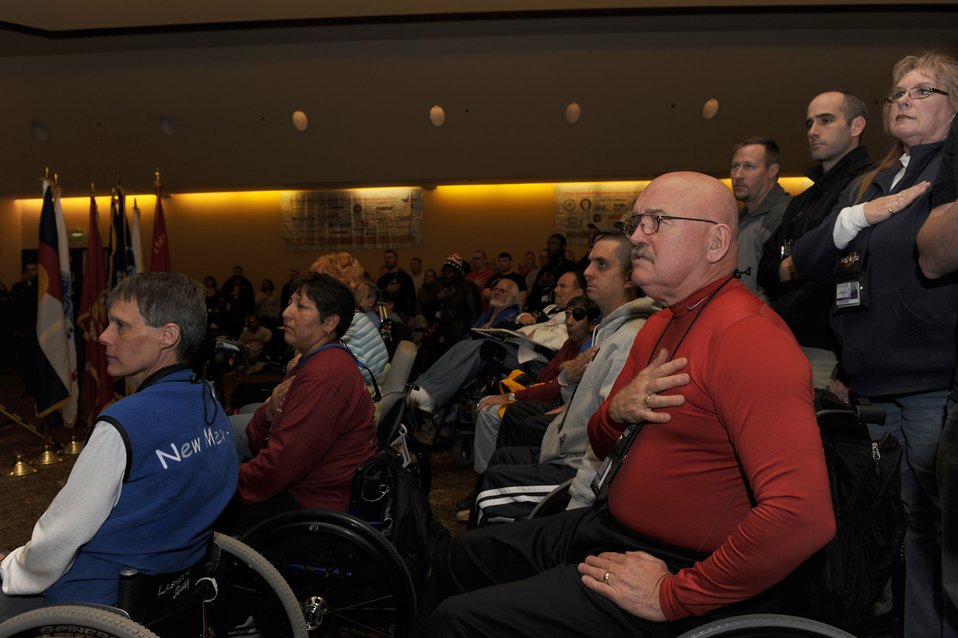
Winter Sports Clinic Opening Ceremony

Veterans participating in the 24th National Disabled American Veterans Winter Sports Clinic in Snowmass Village, Colo., recite the Pledge of Allegiance at the opening ceremony March 28, 2010. The event is sponsored by the Veterans Affairs Department and Disabled American Veterans.